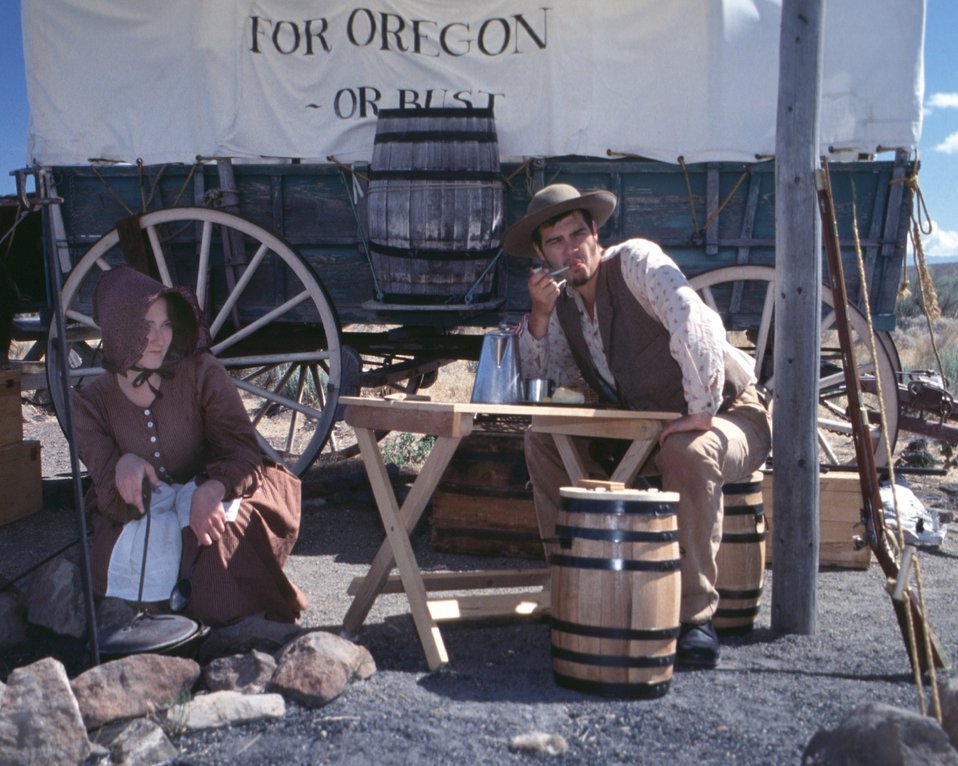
Rebecca Crow and Brandon Kames portray a pioneer couple at a wagon encampment.